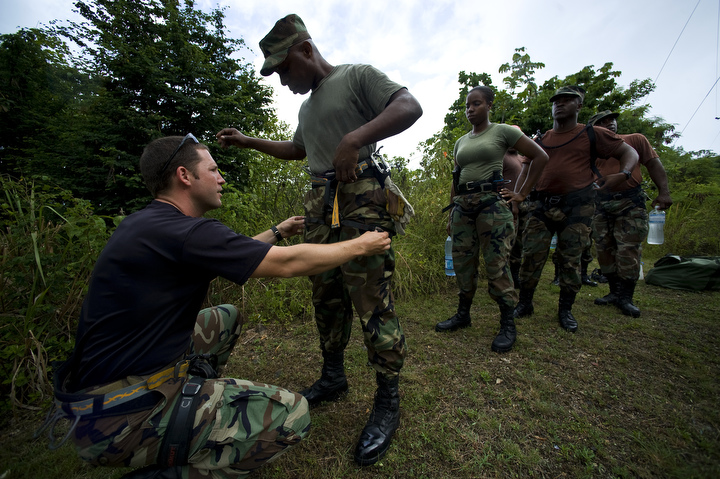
St. Lucia police team with Airmen during Operation Southern Partner

Capt. Travis Shepard (left) conducts buddy checks on rappelling harnesses to members of the Royal St. Lucia police force's special service unit June 1 during a subject matter expert exchange on mountaineering and high angle recovery rescue procedures during Operation Southern Partner in La Toc, St. Lucia. Captain Shepard is a combat rescue officer with the 58th Rescue Squadron at Nellis Air Force Base, Nev.